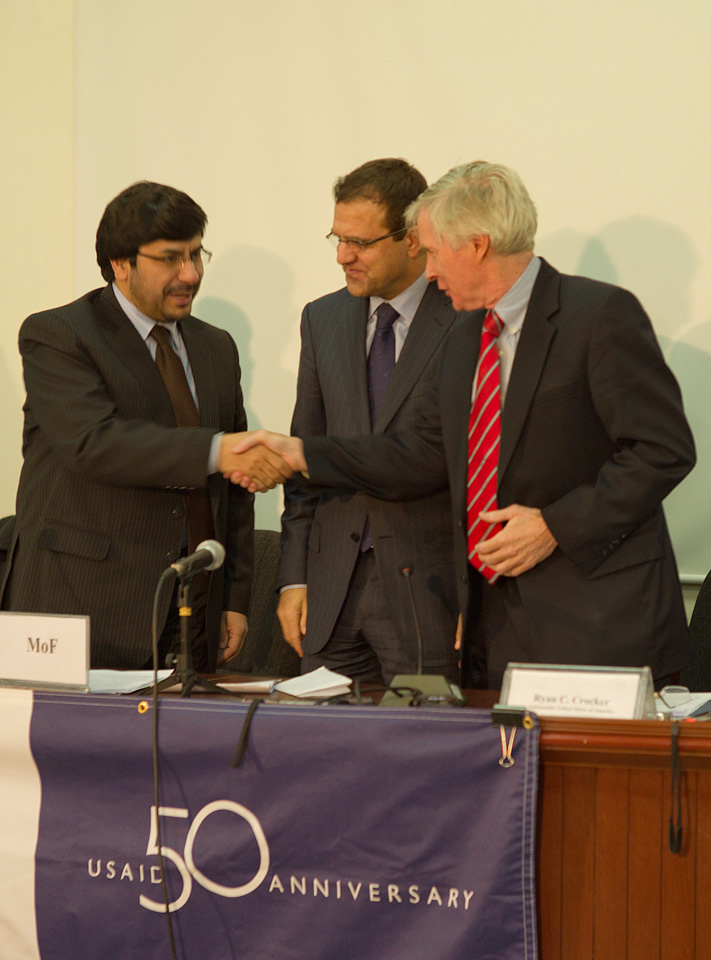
Ambassador Crocker shaking hands